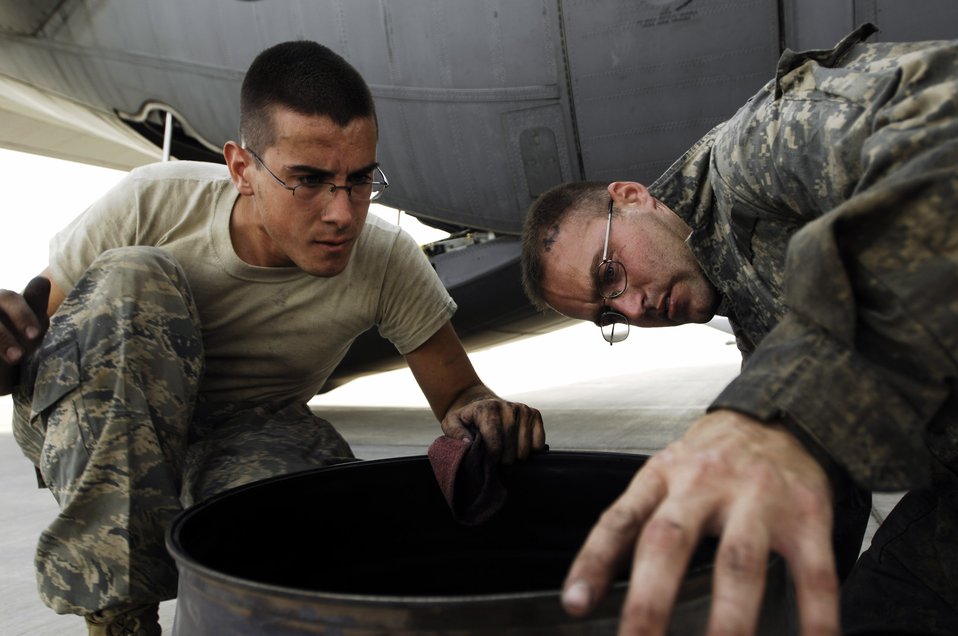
An ounce of prevention

Senior Airman Sean Sweeney (left) Staff Sgt. Robert Crow and identify a crack along the rear bearing support of a C-130 Hercules engine during a post-flight inspection Aug. 22 at Joint Base Balad, Iraq. Sergeant Crow and Airman Sweeney are aerospace propulsion technicians with the 777th Expeditionary Aircraft Maintenance Squadron and are deployed from Little Rock Air Force Base, Ark. Sergeant Crow's hometown is Fort Worth, Texas. Airman Sweeney's hometown is Columbia, N.J.